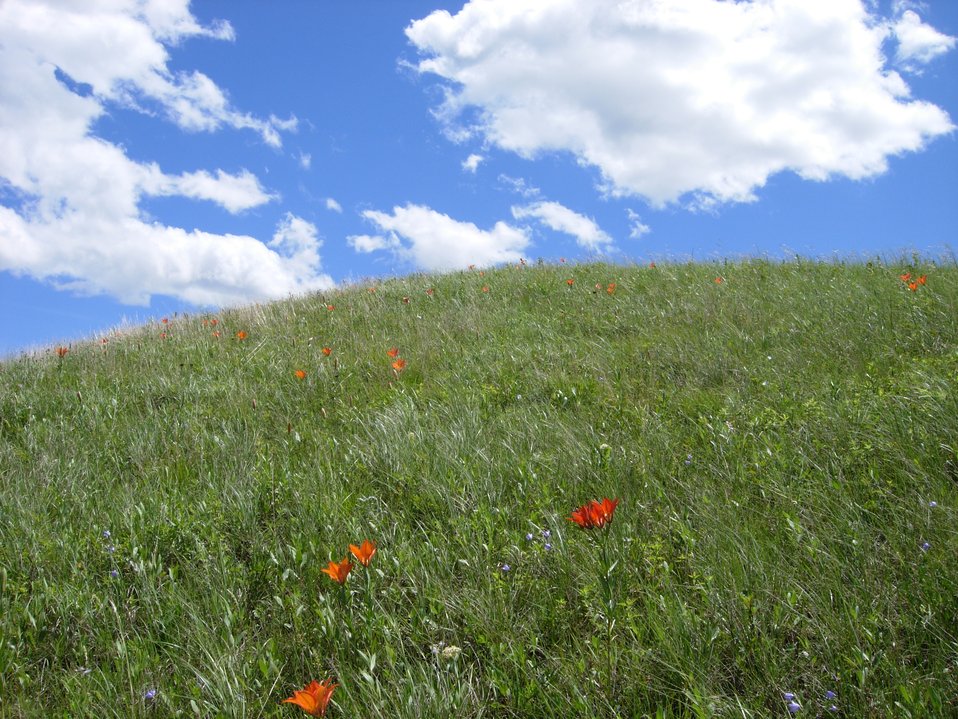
J. Clark Salyer National Wildlife Refuge